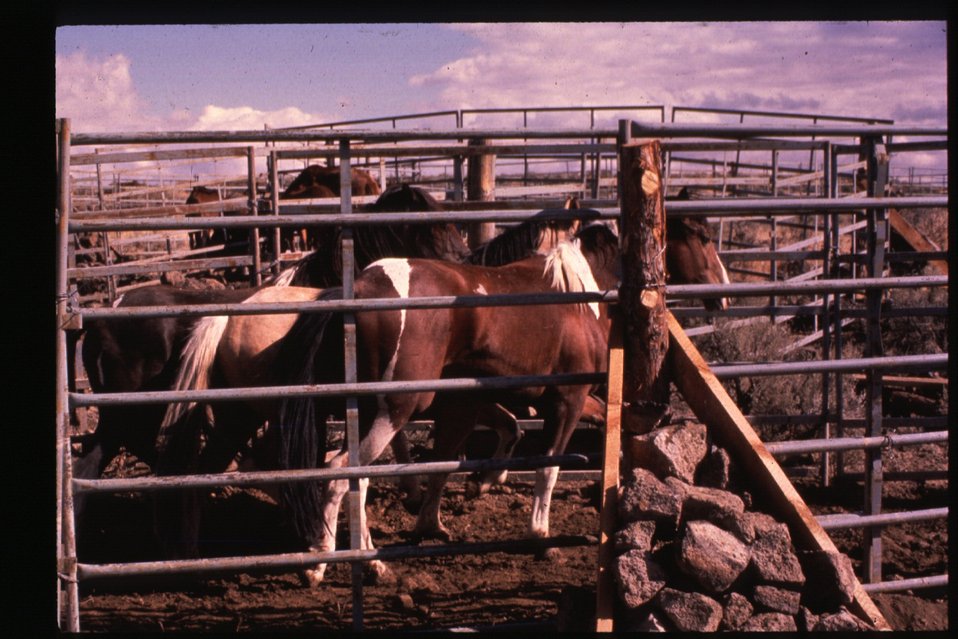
Penned wild horses Wild Horse and Burro Adoption Program LSRD Lower Snake River District